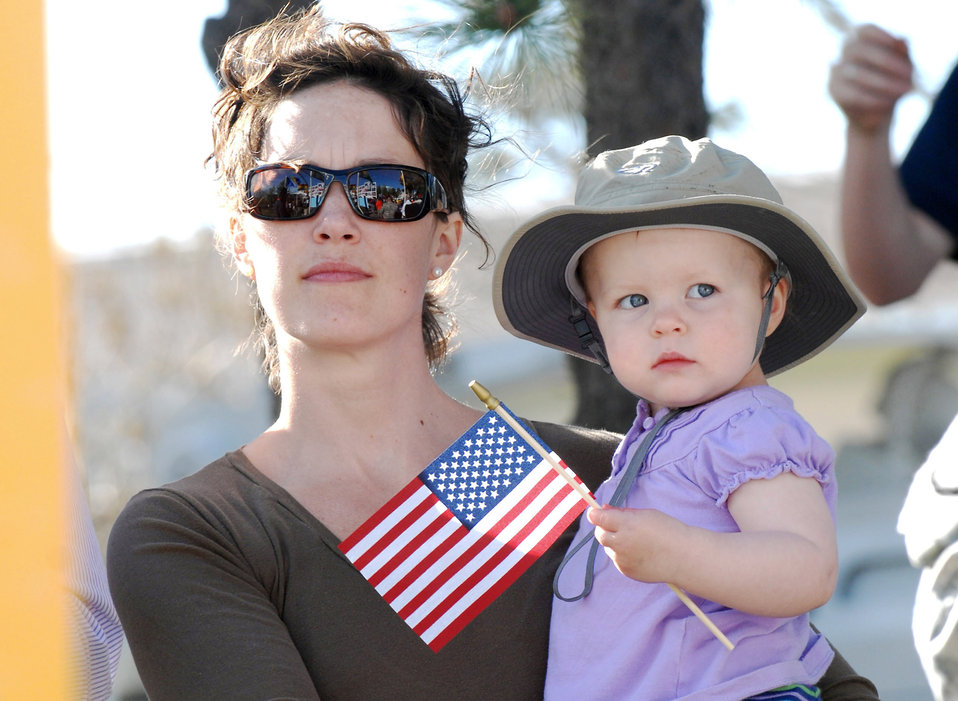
Disabled vets, troops compete in first Warrior Games

A mother and daughter cheer on some 200 competitors at the opening ceremony of the inaugural Warrior Games May 10, 2010, at the U.S. Olympic Training Center in Colorado Springs, Colo. Disabled veterans are competing in Paralympic-style events May 10 through 14.